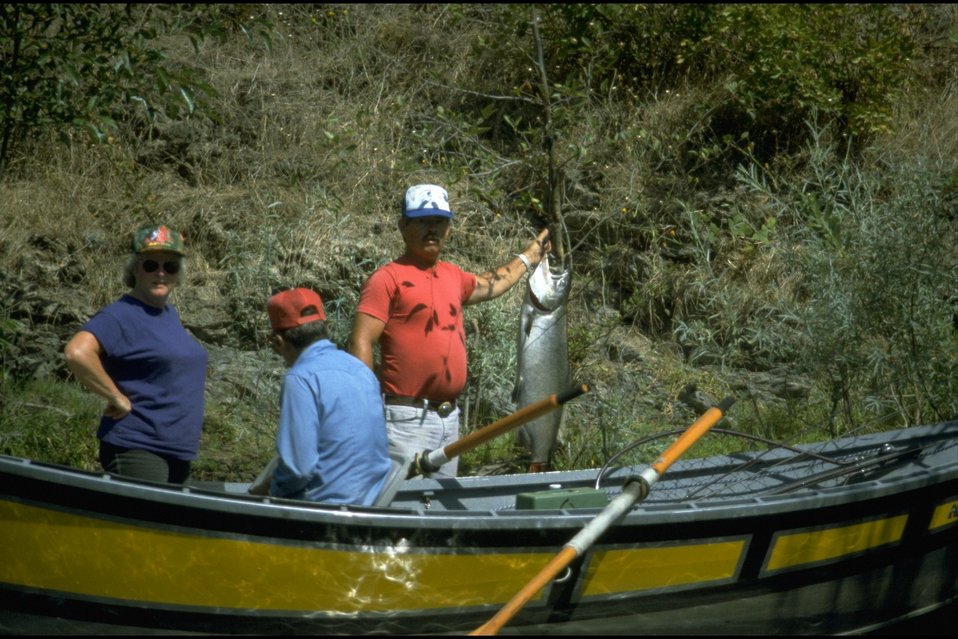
Rogue River - Near Griffin Park, Hellgate Recreation Area. Drift boat fishing for Chinook salmon.